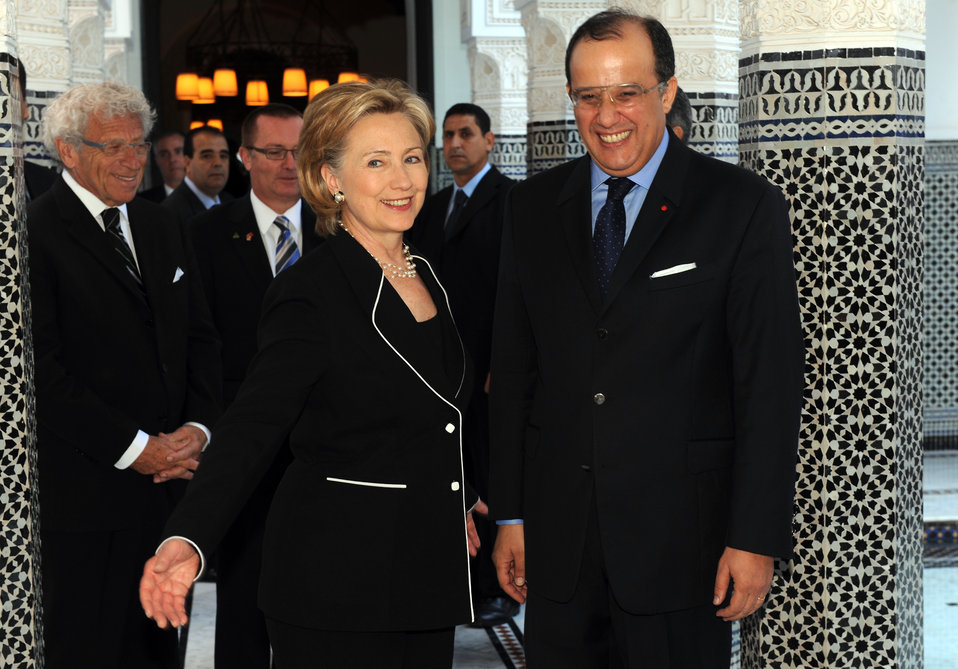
Secretary Clinton Attends 6th Forum for the Future

U.S. Secretary of State Hilllary Rodham Clinton attends the 6th Forum for the Future in Marrakesh, Morocco November 3, 2009.